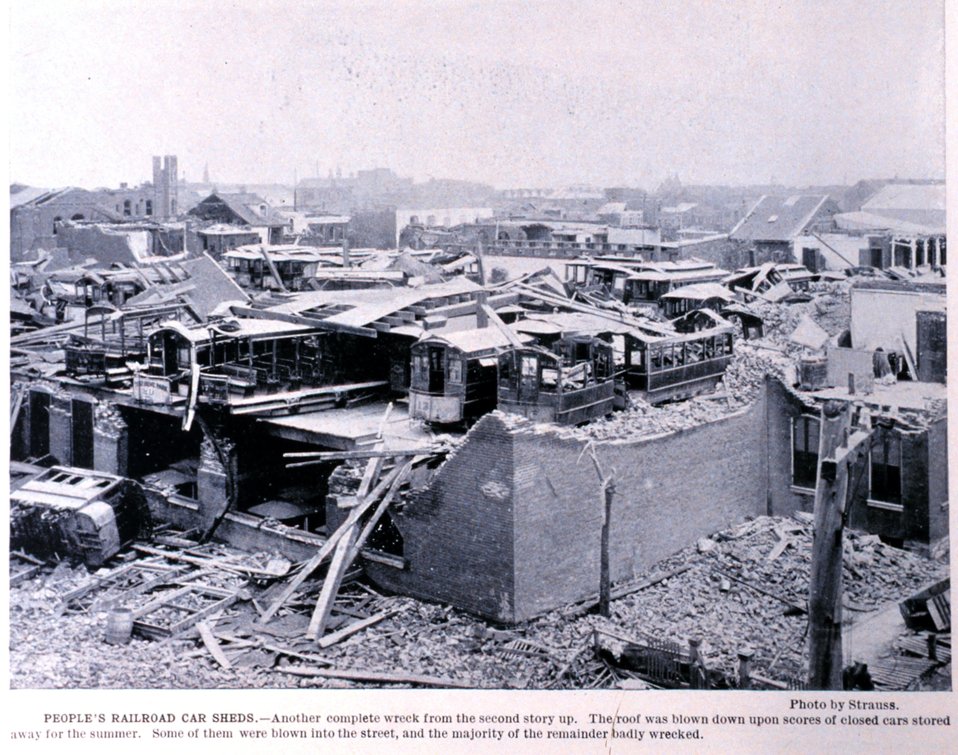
People's Railroad Car Sheds. In: 'Photographic Views of the Great Cyclone at St. Louis, May 27, 1896.' Library Call Number M15.1 P575.